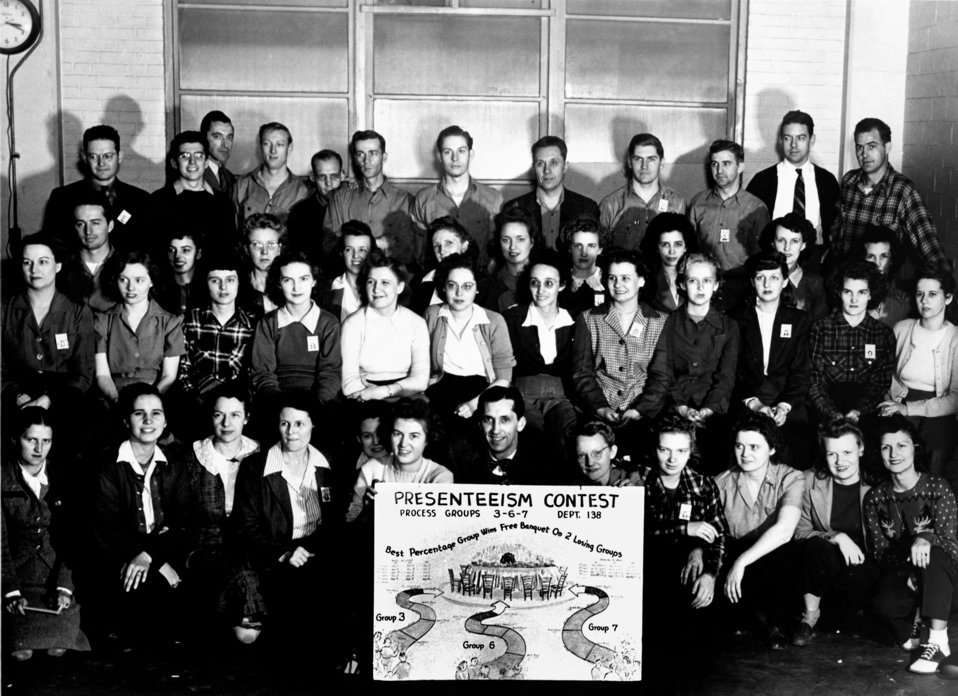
Presenteeism Contest Group Oak Ridge 1944

MED-225 DOEphoto Ed Westcott 1-3-1944 Oak Ridge Tennessee